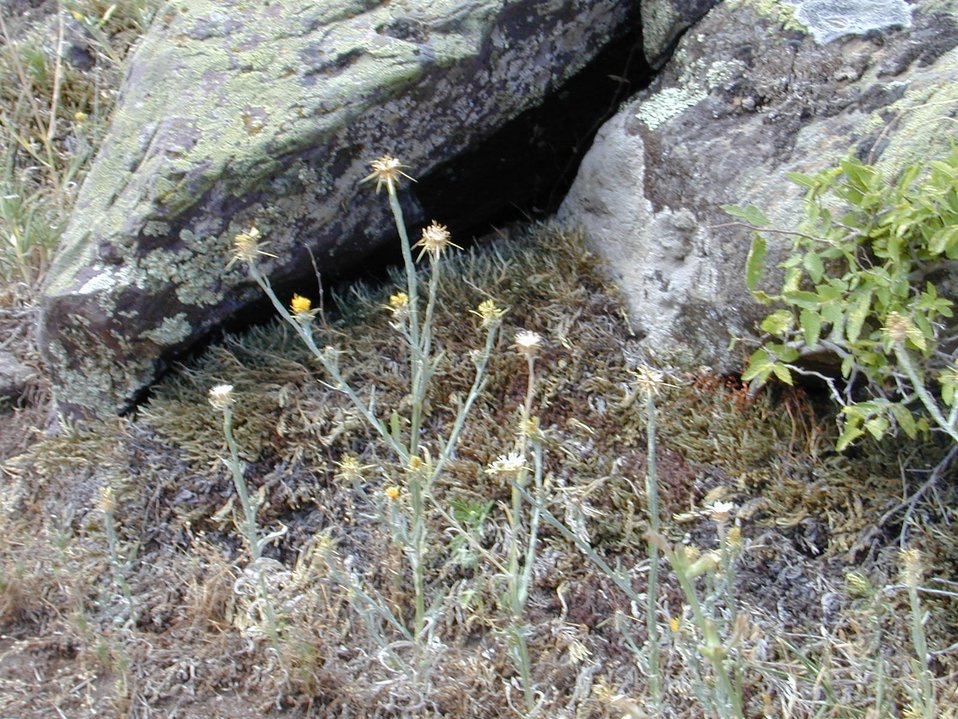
Yellow Starthistle Cottonwood Field Office UCSC Upper Columbia Salmon Clearwater Districtr